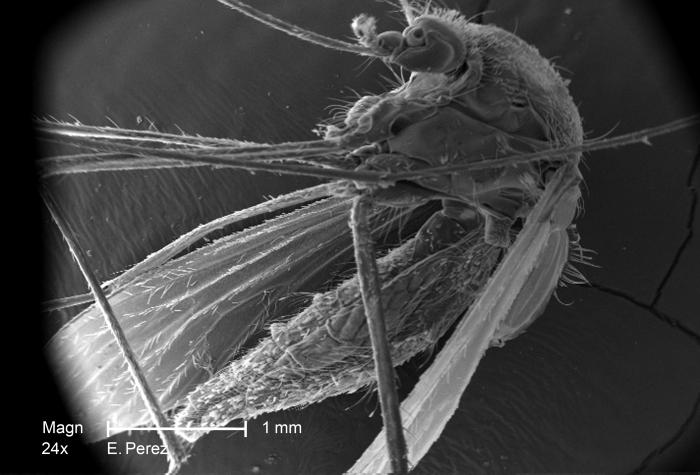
Photographed under a very low magnification of only 24X, in order to capture the cephalic, thoracic and abdominal segments together, this scanning electron micrograph (SEM) revealed some of the exoskeletal morphology on the surface of an unidentified mosquito found deceased in the suburbs of Decatur, Georgia. An already structurally-frail organism, this insect was discovered in a very dry, dessicated stated, and therefore, was missing a number of its body parts, including its antennae.